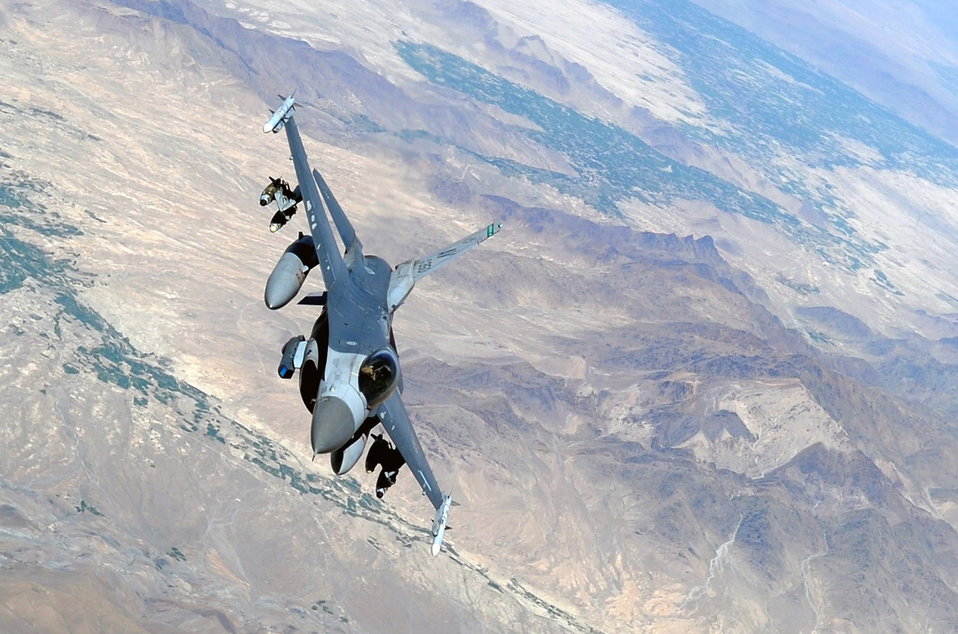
Refueling the fight

An F-16 Fighting Falcon returns to its mission May 8, 2011, above Afghanistan, after receiving fuel from a KC-135 Stratotanker.